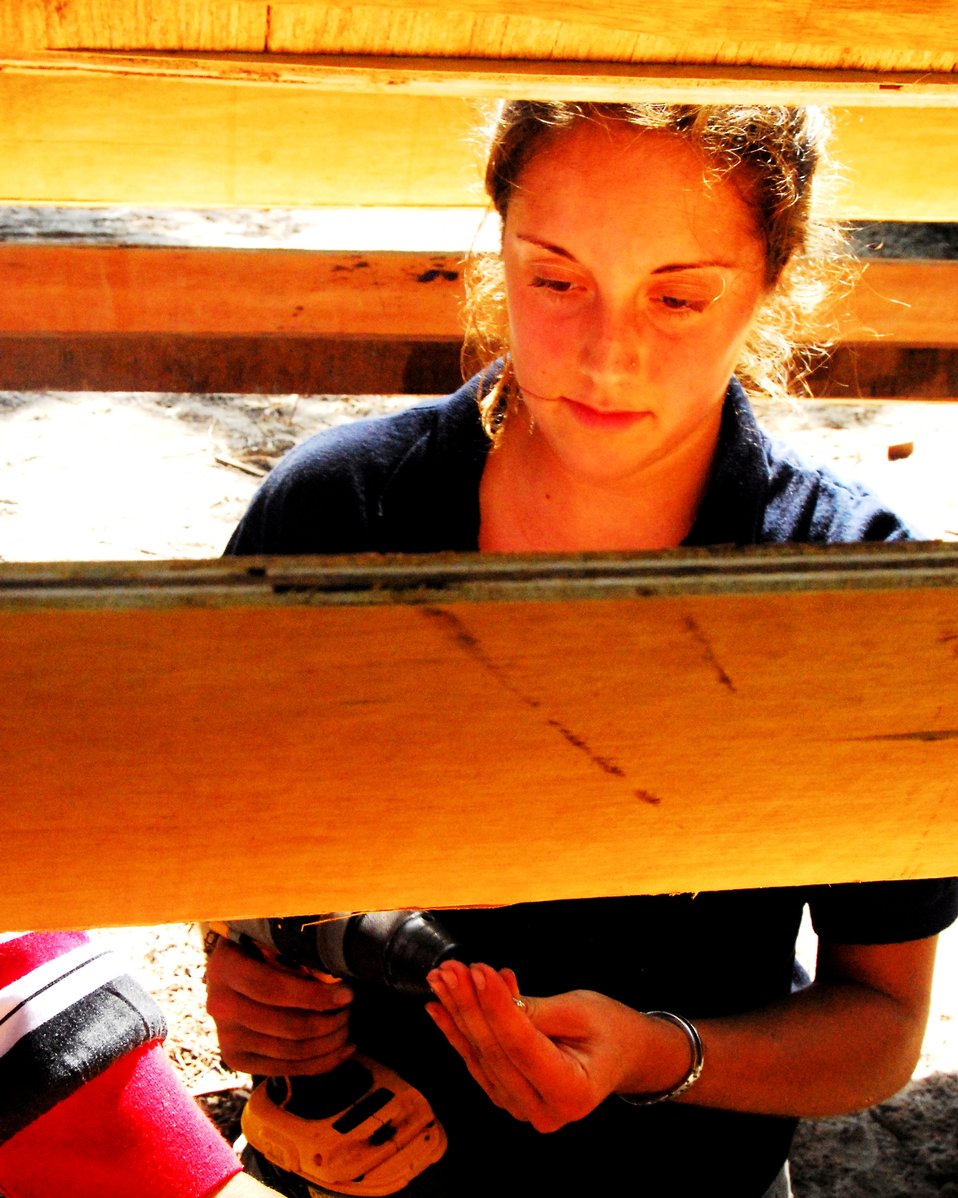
Civil Engineering Student Houle Makes a Book Shelf

Elizabeth Houle, a University of Virginia civil engineering student working with University of California, San Diego Pre-Dental Society and currently embarked with the Military Sealift Command hospital ship USNS Mercy (T-AH 19) makes a book shelf at the O. Tres Primary School during an engineering civic action program in Sihanoukville, Cambodia, on June 24, 2010. Mercy is deployed as part of Pacific Partnership 2010, the fifth in a series of annual U.S. Pacific Fleet humanitarian and civic assistance endeavors.